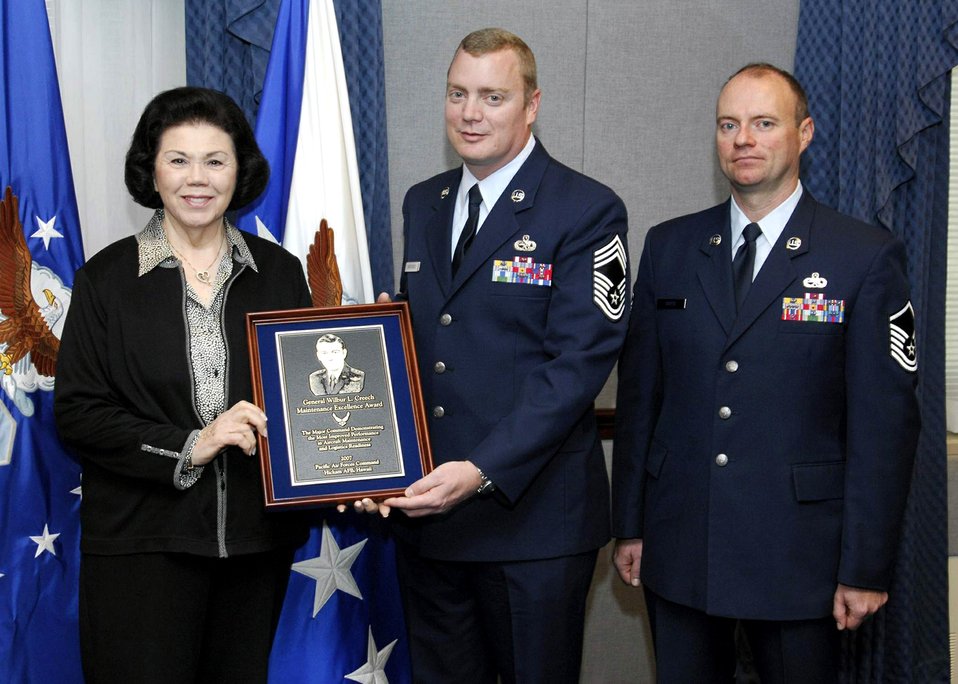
PACAF receives Air Force maintenance award

Carol Creech, Chief Master Sgt. Robert L. Norcross II and Master Sgt. Jeffrey Soots pose with the Gen. Wilbur L. Creech Maintenance Excellence Award during a ceremony Jan. 16 at the Pentagon. Chief Norcross and Sergeant Soots accepted the award on behalf of the 10,000-plus maintainers and logisticians in Pacific Air Forces command. Mrs. Creech is the wife of the general, who passed away in 2003.